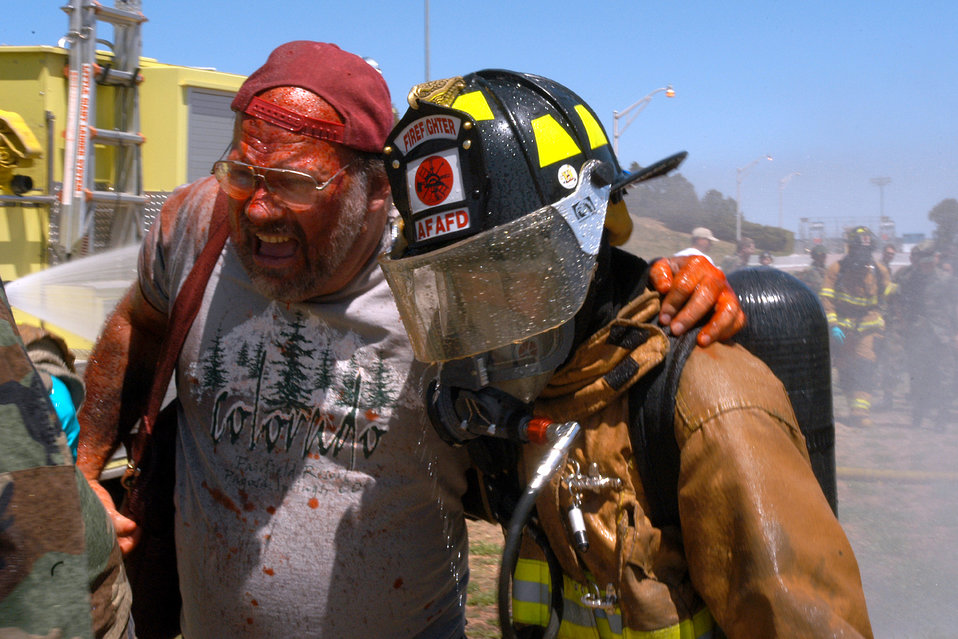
This is only an exercise

U.S. AIR FORCE ACADEMY -- An academy firefighter helps an